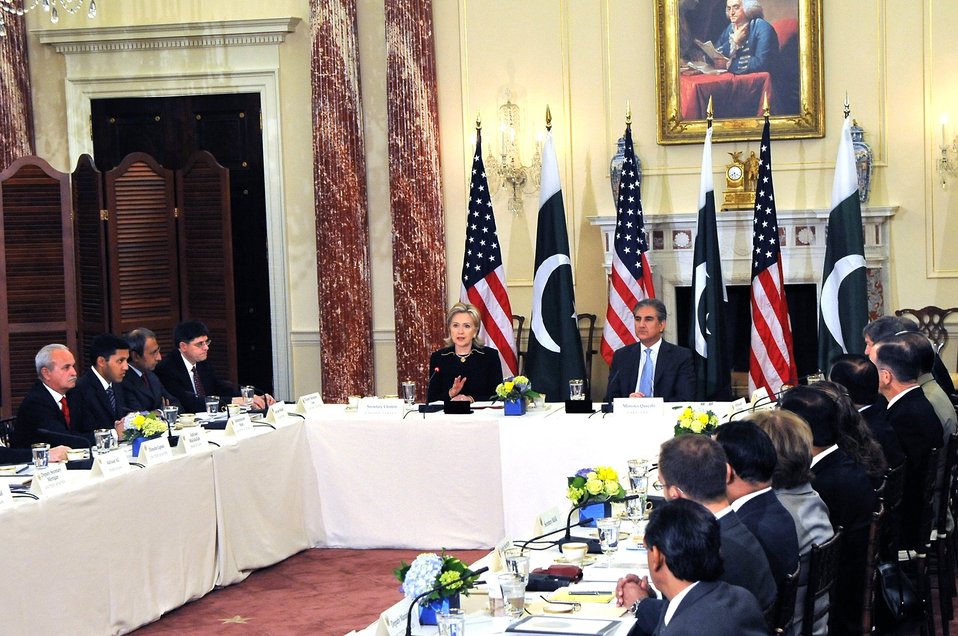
Secretary Clinton Hosts the U.S. Pakistan Strategic Dialogue Meeting

U.S. Secretary of State Hillary Rodham Clinton speaks at the U.S. Pakistan Strategic Dialogue meeting, featuring Pakistani Foreign Minister Makhdoom Shah Mahmood Qureshi, at the U.S. Department of State in Washington, D.C., March 24, 2010.